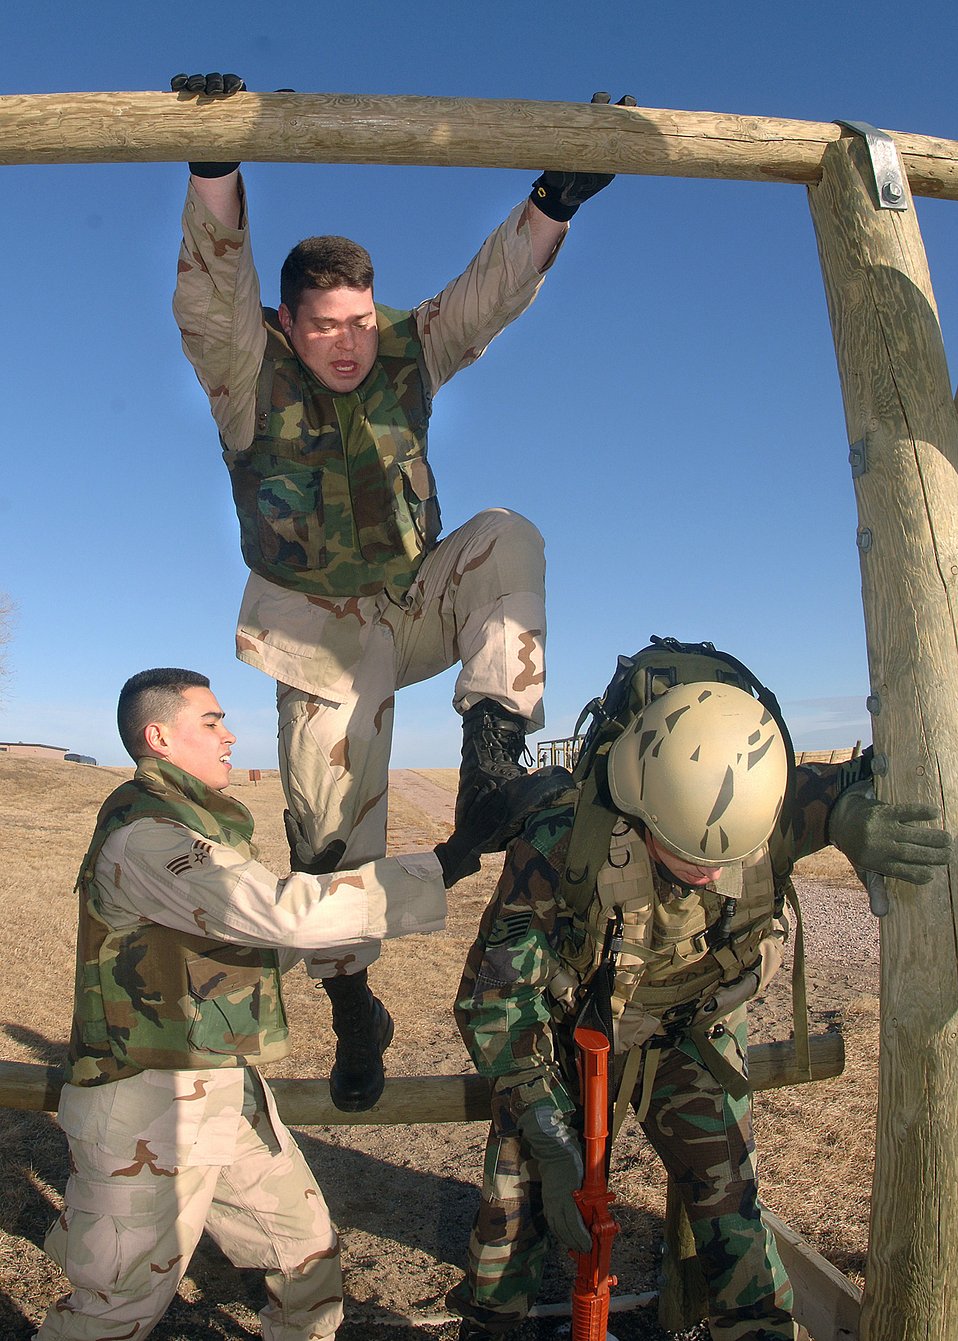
Buddy system

ELLSWORTH AIR FORCE BASE, S.D. (AFPN) -- Senior Airmen Robert Ollquist and Matthew Pilch and Staff Sgt. Eric Utrecht use the buddy system to climb over the bar at the confidence course Feb. 8. This segment of Airman Leadership School is used to increase morale and promote teamwork. Airman Ollquist is assigned to the 28th Logistics Readiness Squadron, Airman Pilch with the 28th Aircraft Maintenance Squadron, and Sergeant Utrecht with the 28th Mission Support Squadron.